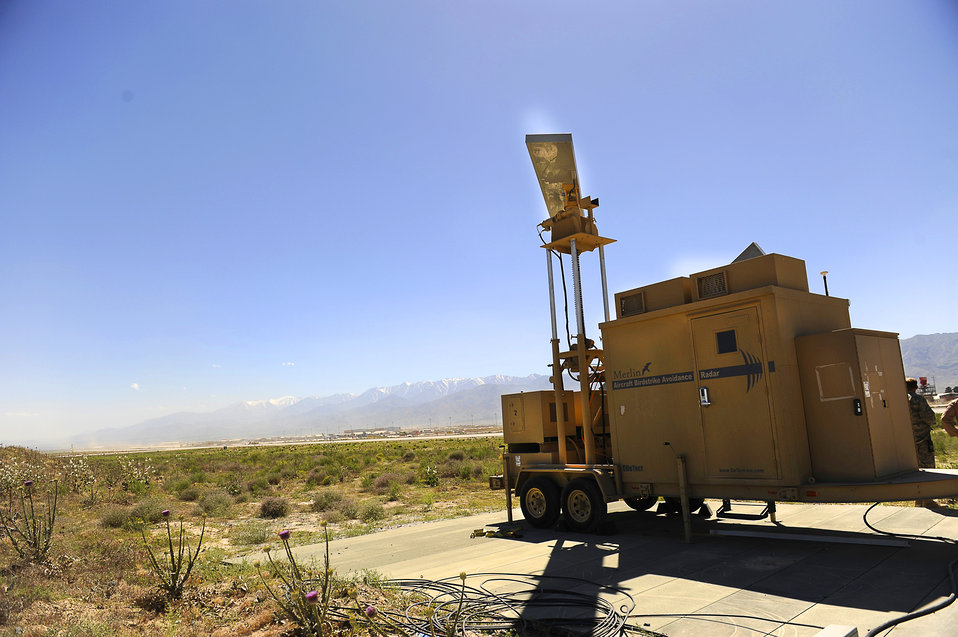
Monitoring the airfield under the watchful eye of Merlin

A new Merlin bird radar system is installed May 29, 2010, at Bagram Airfield, Afghanistan.